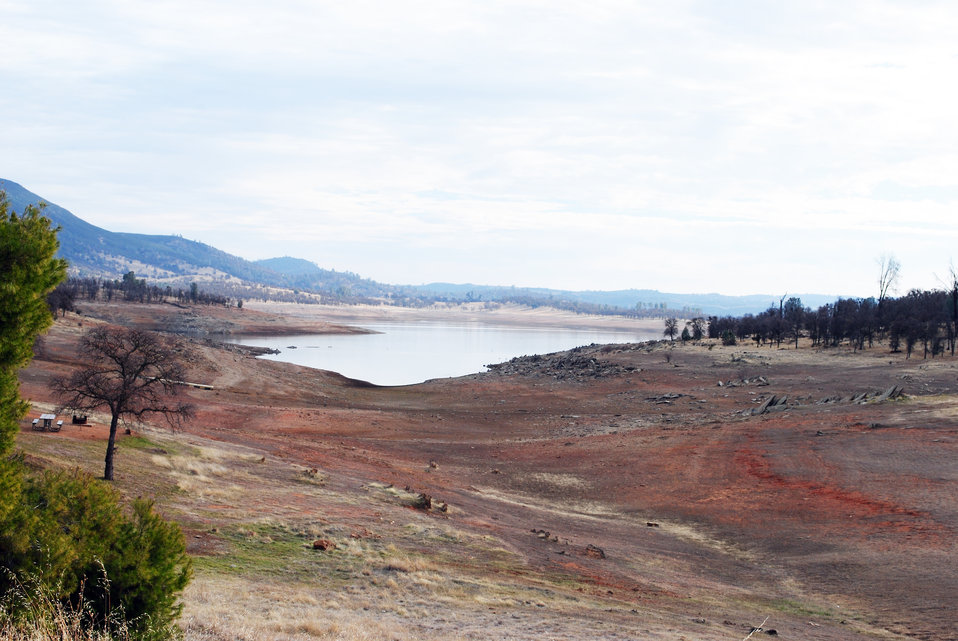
Dry times at New Hogan Lake

140106-A-ZZ999-902 – Overlooking New Hogan Lake, a U.S. Army Corps of Engineers Sacramento District park and recreation area in Valley Springs, Calif., shows land where there would usually be water Jan. 6, 2014. This winter’s unseasonably dry weather has caused many lakes in Northern California to hit record lows.